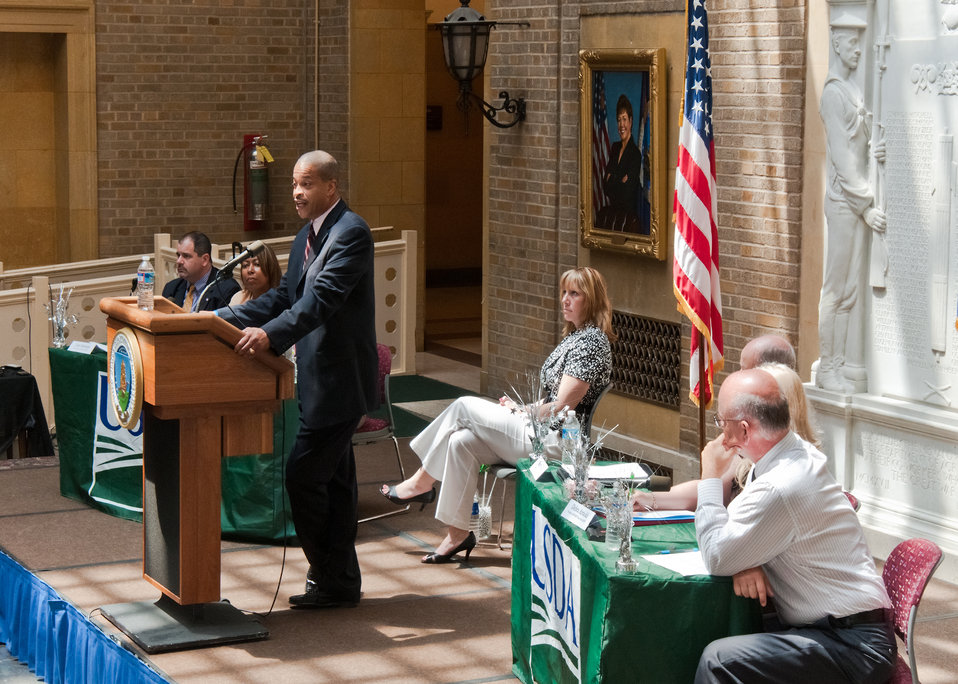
Billy Milton, Jr., Deputy Director, Office of Human Resources Management, Departmental Management describes the advantages and cost benefits to employees of the Department of Agriculture during a “Telework Program Party/Brown Bag” event on the patio of the Jamie Whitten Building of United States Department of Agriculture, in Washington, DC, on Tuesday, June 7, 2011. To Milton’s right are panel members Mika Cross, Office of Human Resources Management, Departmental Management, Morris Tate, Director for Business Services, Office of Operations, Debra Arnold, Rural Development and President, AFSCME Union Local 3870 (USDA) and Owen Unangst, Director, Innovations and Emerging Technologies, Office of the Chief Information Officer. The event included an interactive telework panel and exhibits from the field of telework, telecommuting and mobile work environments. The event was open to all USDA employees, supervisors, managers, human resources staff and USDA telework program coordinators.